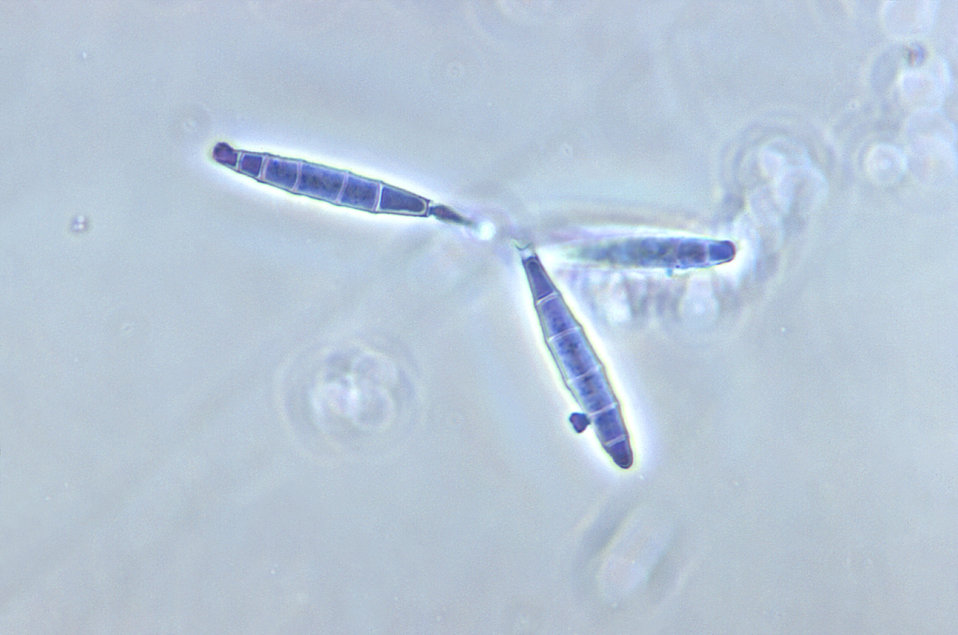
Magnified 500X, this photomicrograph revealed some of the ultrastructural morphology exhibited by the fungal organism, Microsporum persicolor. This particular image highlights details seen in three macroconidia, which are the asexual spores that originate from the filamentous conidiophore. These macroconidia are also known as mitospores, for they are born out of the process of mitosis, and are therefore, haploid when they reach maturity. Unlike the single-celled microconidia, the M. persicolor macroconidia are composed of multiple, attached microconidia, separtated by cell walls, and configured in a cigar-shaped chain.